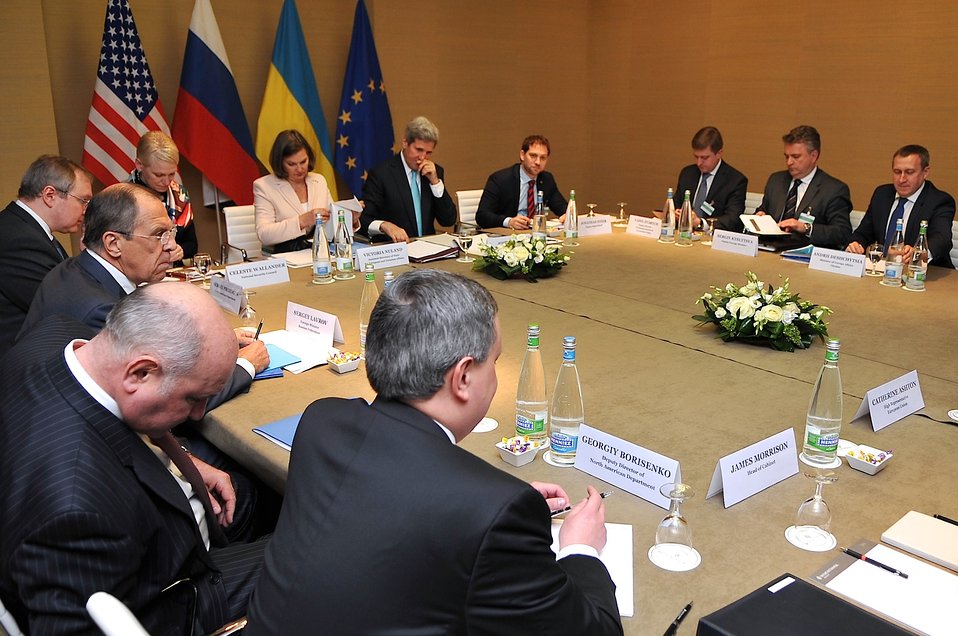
U.S., Russian, Ukrainian Foreign Ministers Prepare For Quadrilateral Meeting in Geneva

U.S. Secretary of State, Russian Foreign Minister Sergey Lavrov, and Ukrainian Foreign Minister Andrii Deshchytsia sit across from one another in Geneva, Switzerland, on April 17, 2014, before a quadrilateral meeting focused on Ukraine that also included European Union High Representative Catherine Ashton.